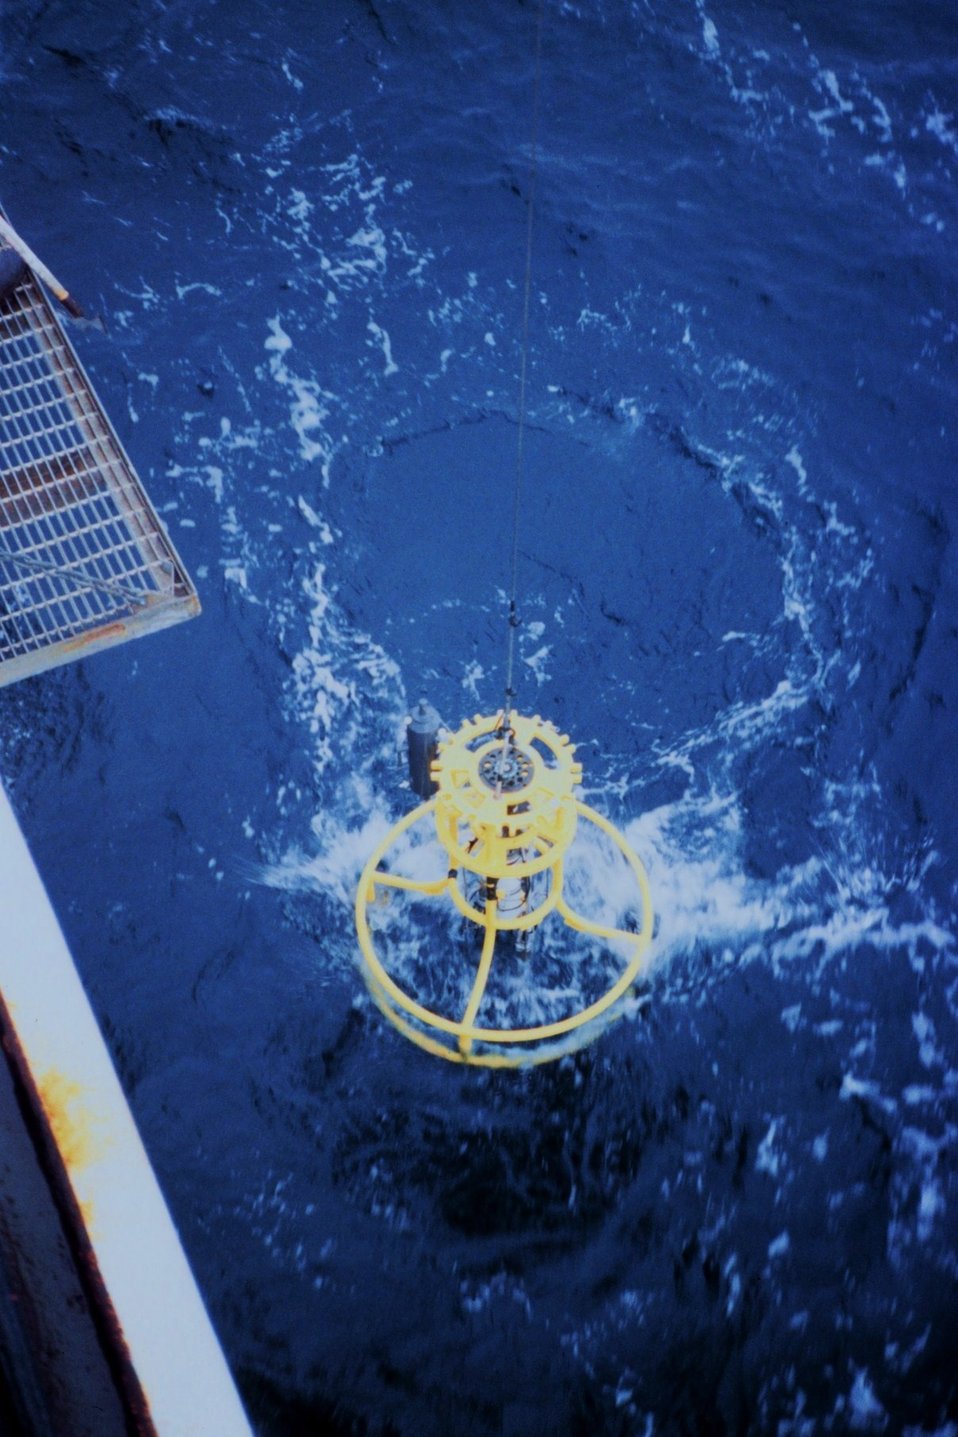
Conductivity-Temperature-Depth measuring instrument being let down to the water surface.